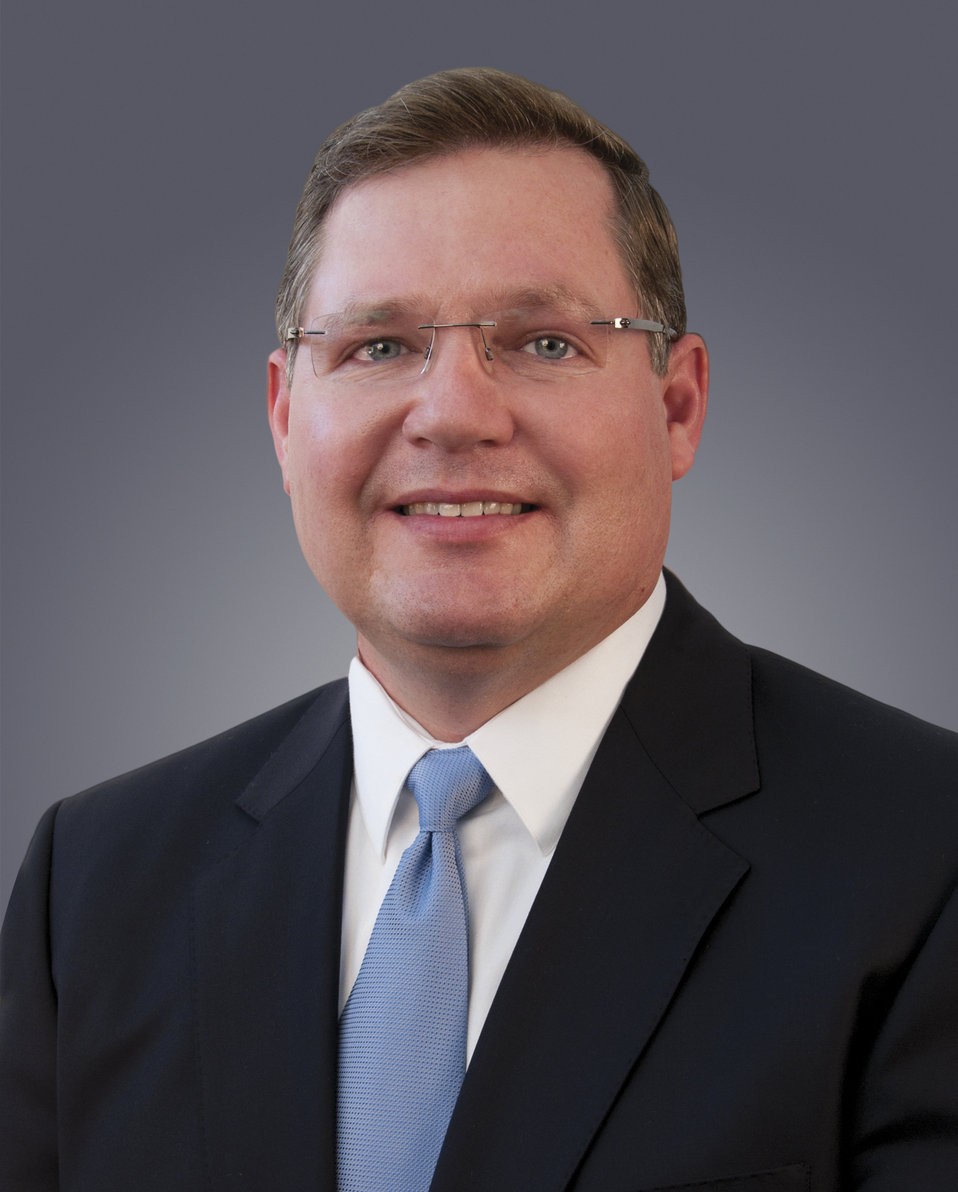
Michael Molnar

Chief Manufacturing Officer